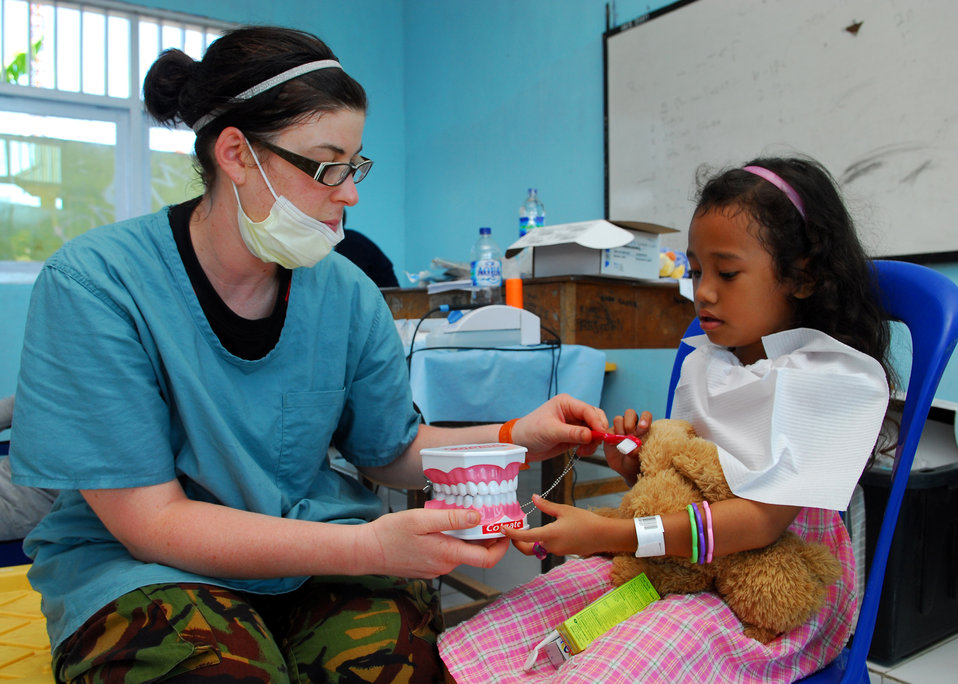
Royal New Zealand Dental Corps Corporal Amy Kelly gives dental hygiene instructions to a child during a dental civic action program in Daruba, Indonesia, on July 15, 2010. The Military Sealift Command hospital ship USNS Mercy (T-AH 19) is in the North Maluku Islands conducting Pacific Partnership 2010, the fifth in a series of annual U.S. Pacific Fleet endeavors conducted in Indonesia as a disaster relief exercise aimed at strengthening regional partnerships.